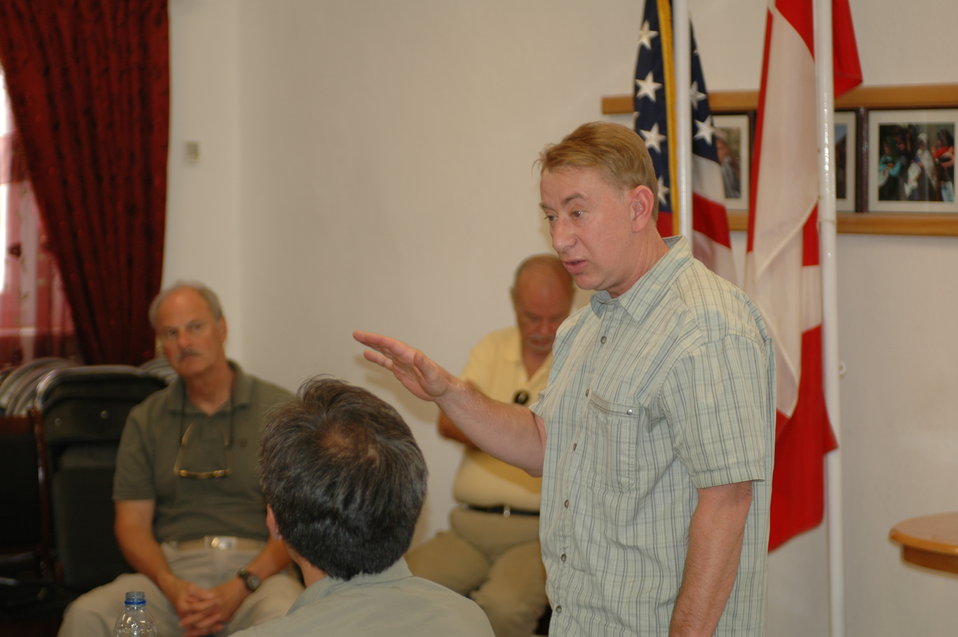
Dr Shah Visits Kandahar April 9, 2010